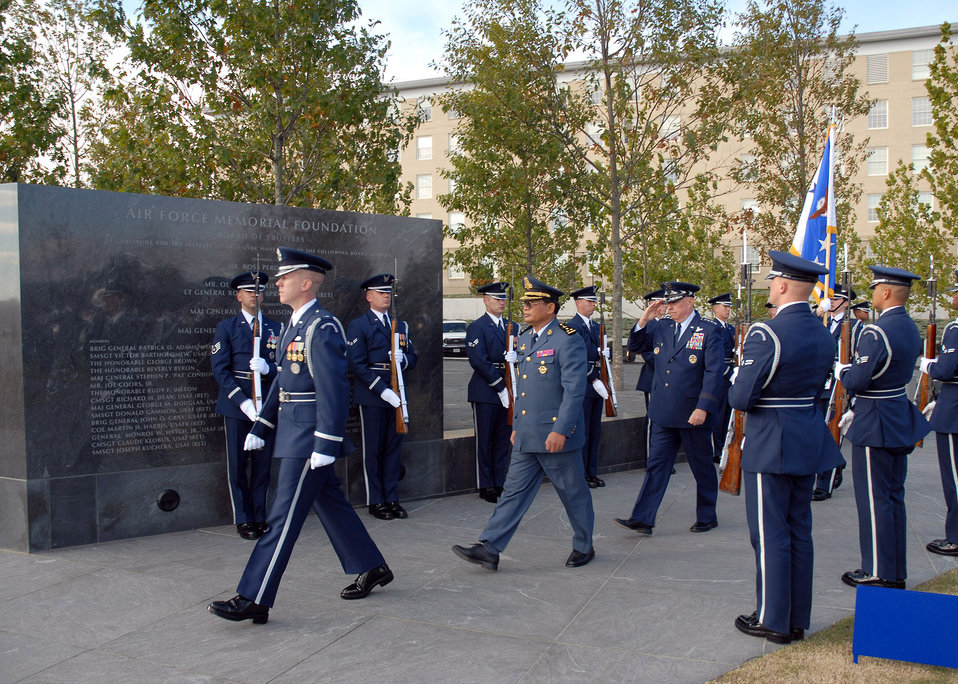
Paying Respect

1st Lt. John Shirley from the Air Force Honor Guard escorts Chief of Staff of the Air Force Gen. T. Michael Moseley and Lt. Gen. Soeung Samnang, Cambodian Royal Air Force commander, to their positions during a foreign dignitary arrival and wreath laying ceremony Tuesday, Oct. 24, 2006, at the Air Force Memorial.